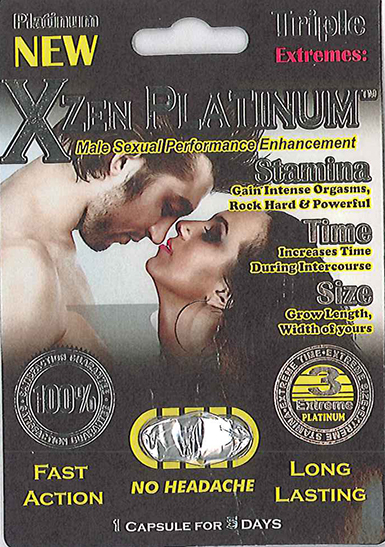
RECALLED – Dietary Supplement

April 1, 2014 – Product Recall – Nova Products, Inc. Issues Voluntary Nationwide Recall of Dietary Supplements with Undeclared Active Pharmaceutical Ingredients.